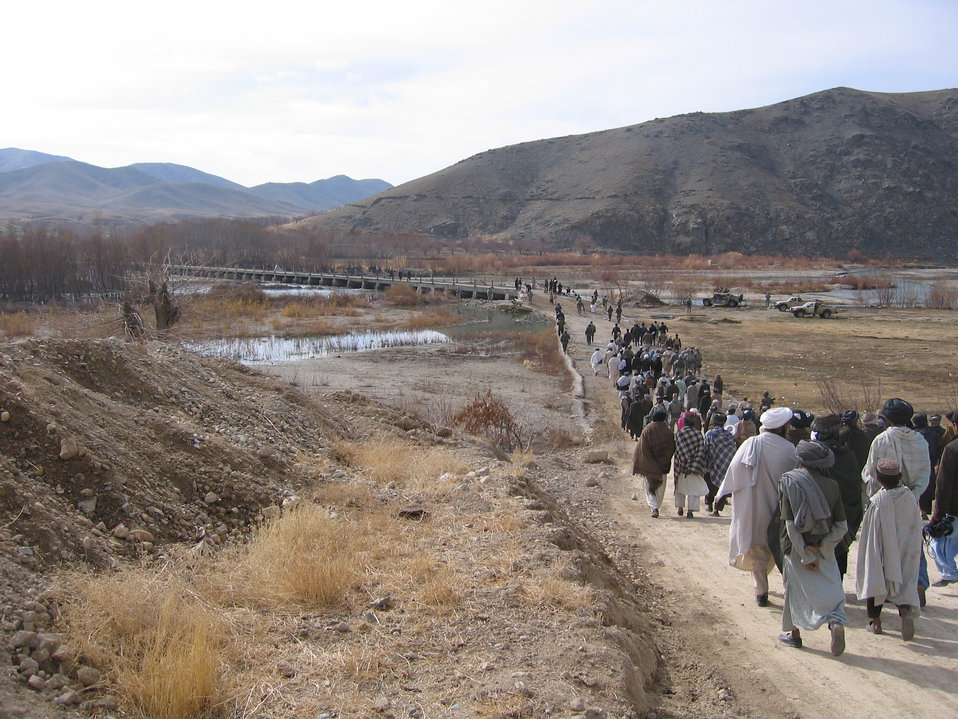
American servicemembers bridge gap between Afghan provinces, relationships

U.S. military servicemembers and Afghans celebrated the opening of the Arghandab Bridge Dec. 26, 2009, at Zabul Province, Afghanistan. The bridge is approximately 200 meters long, four meters wide and has a high load-bearing capacity. Although simple, the bridge allows easy maintenance for the Afghans.